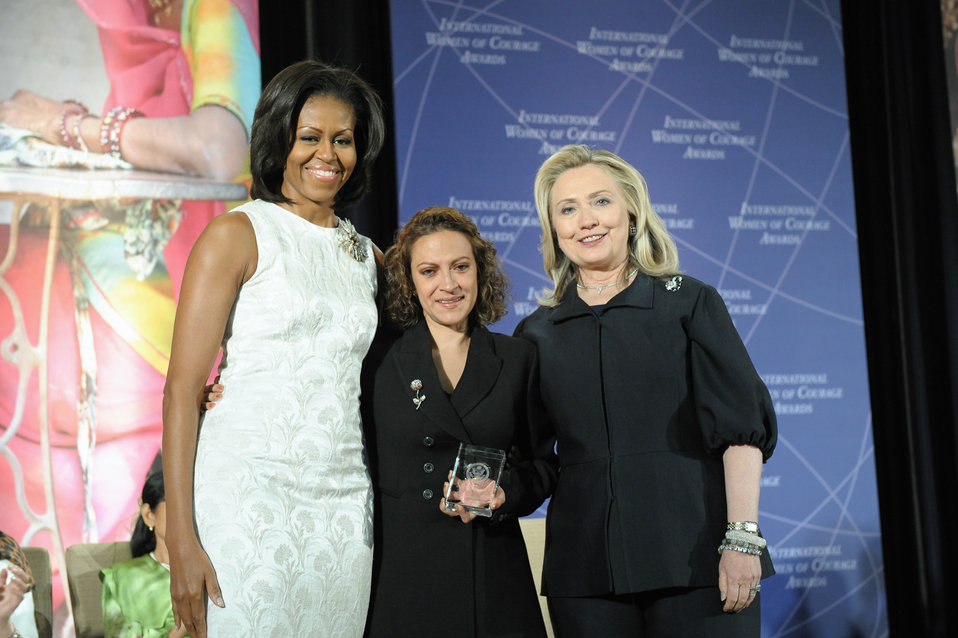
Secretary Clinton and First Lady Obama With 2012 IWOC Award Winner Jineth Bedoya Lima of Colombia

U.S. Secretary of State Hillary Rodham Clinton, right; and First Lady Michelle Obama, left; pose for a photo with 2012 International Women of Courage (IWOC) Award Winner Jineth Bedoya Lima of Colombia, at the U.S. Department of State in Washington, D.C., on March 8, 2012.